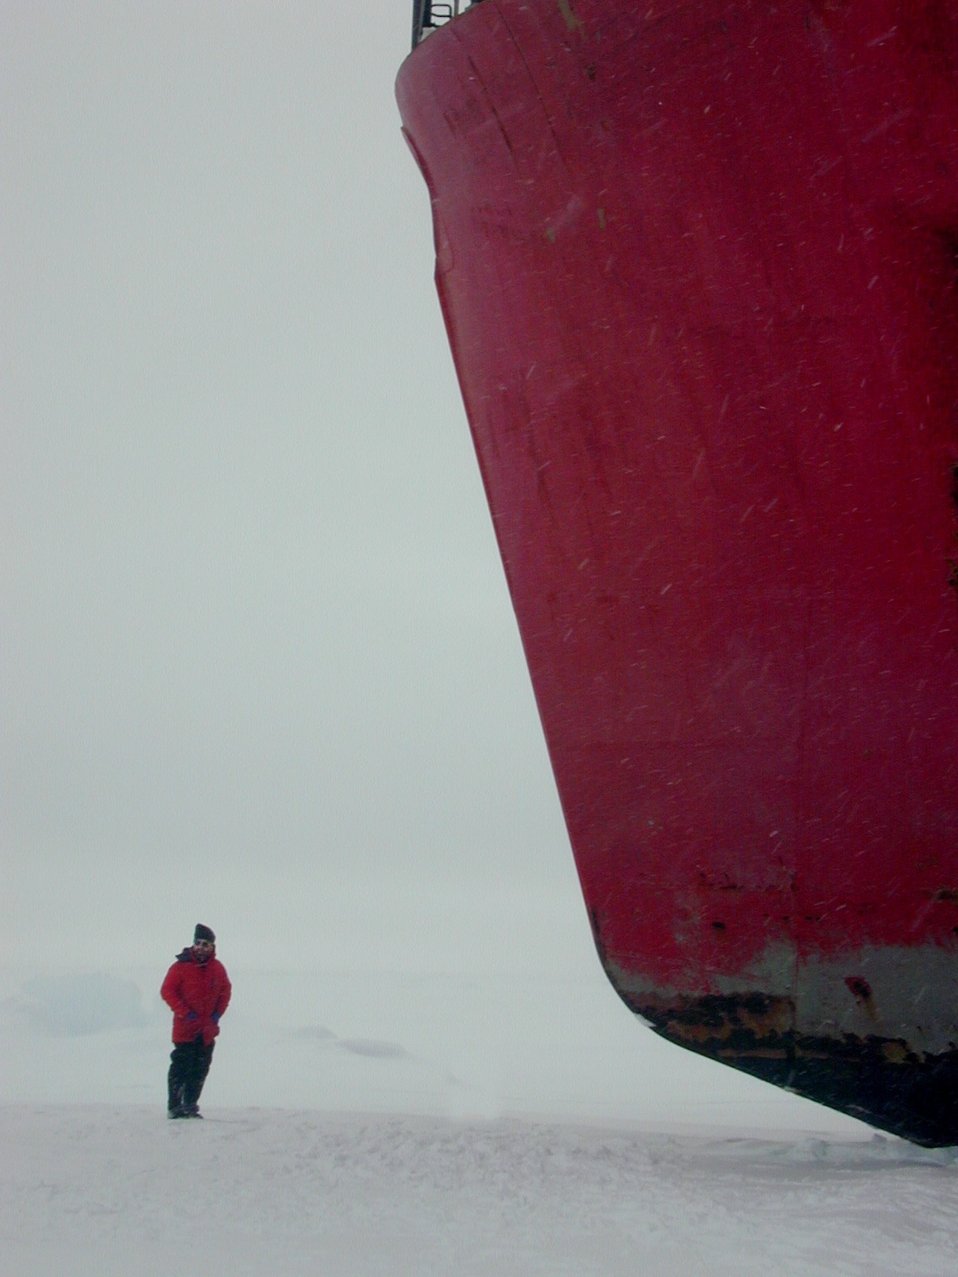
Scientist standing next to the bow of the U.S. Coast Guard Icebreaker HEALY.